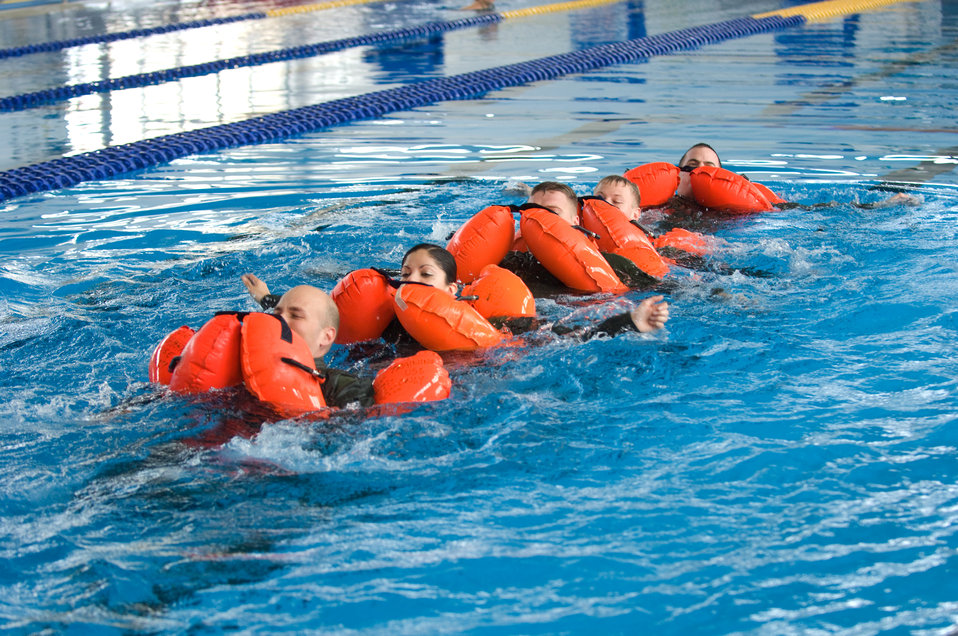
No easy day at the pool

Aircrew members practice group swimming during water survival refresher training recently at the natatorium indoor pool at Yokota Air Base, Japan. The training is especially important for Yokota aircrews, who routinely fly long distances over large bodies of water in the Pacific Rim.